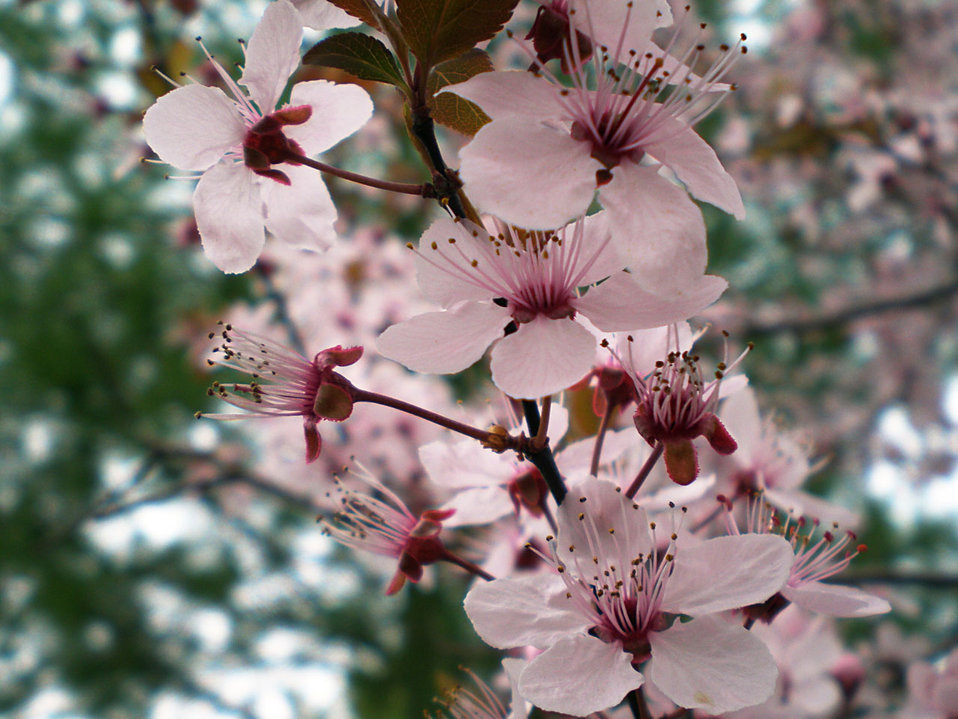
Plum tree

A plum tree.